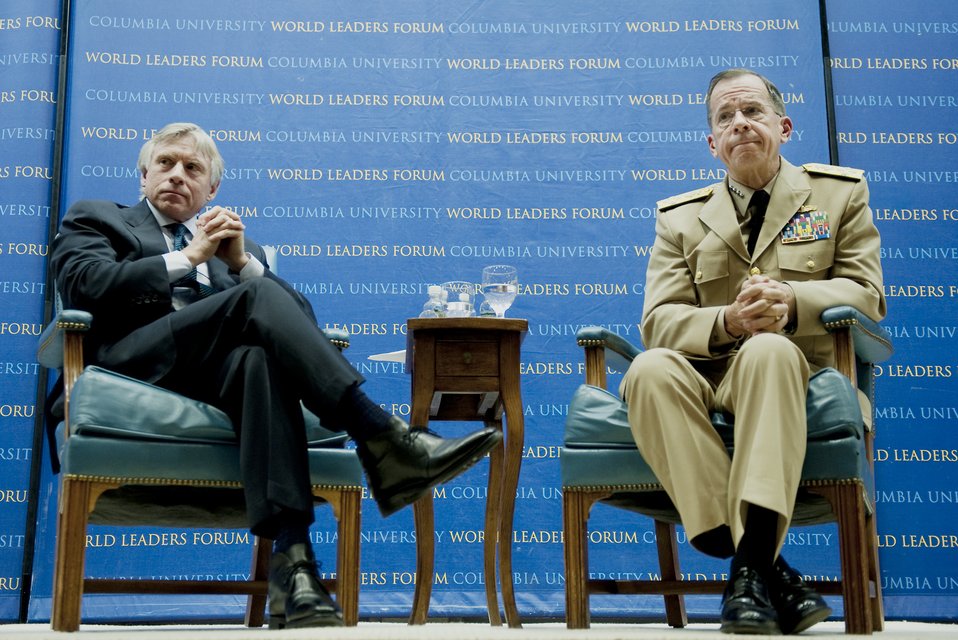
CJCS support for veterans

Lee C. Bollinger, president of Columbia University, and Adm. Mike Mullen, chairman of the Joint Chiefs of Staff, take questions at the Columbia University World Leaders Forum in New York City, April 18, 2010.